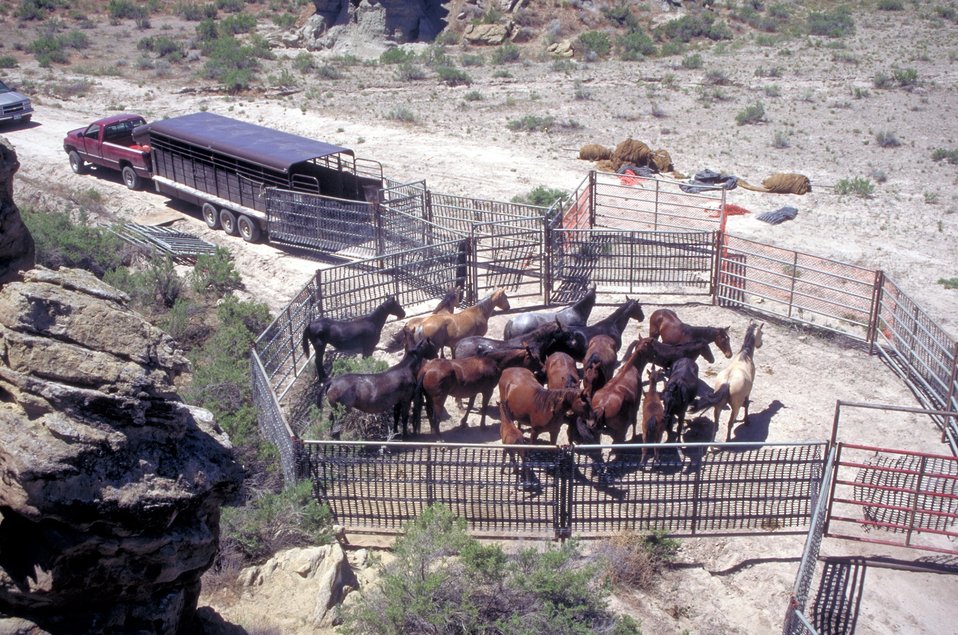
Wild Horse gather near Vernal, Utah.